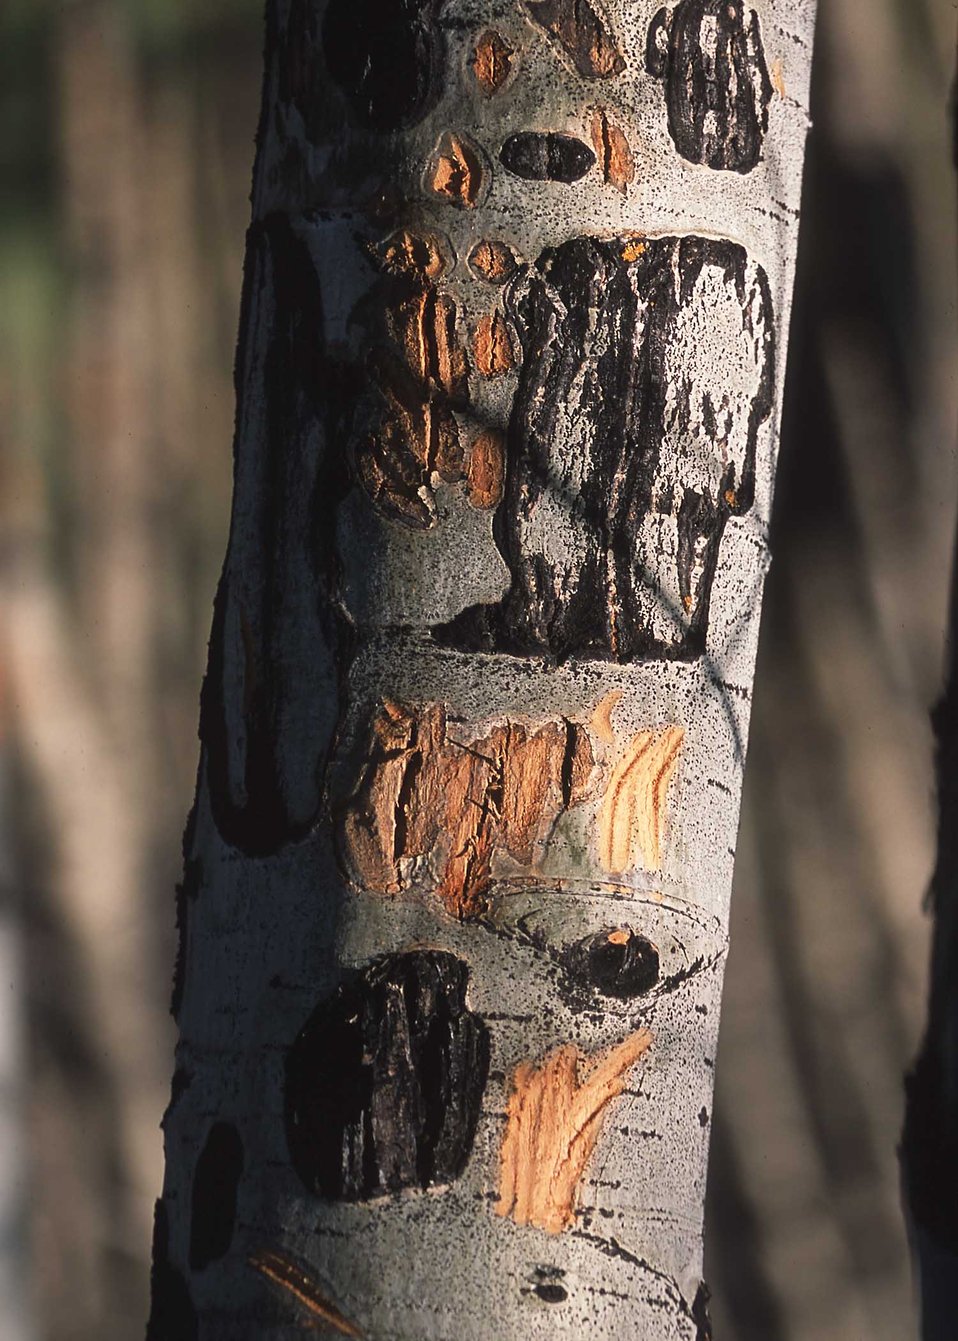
Elk grazed on this aspen tree in winter to obtain nutrients. Chamas, New Mexico.